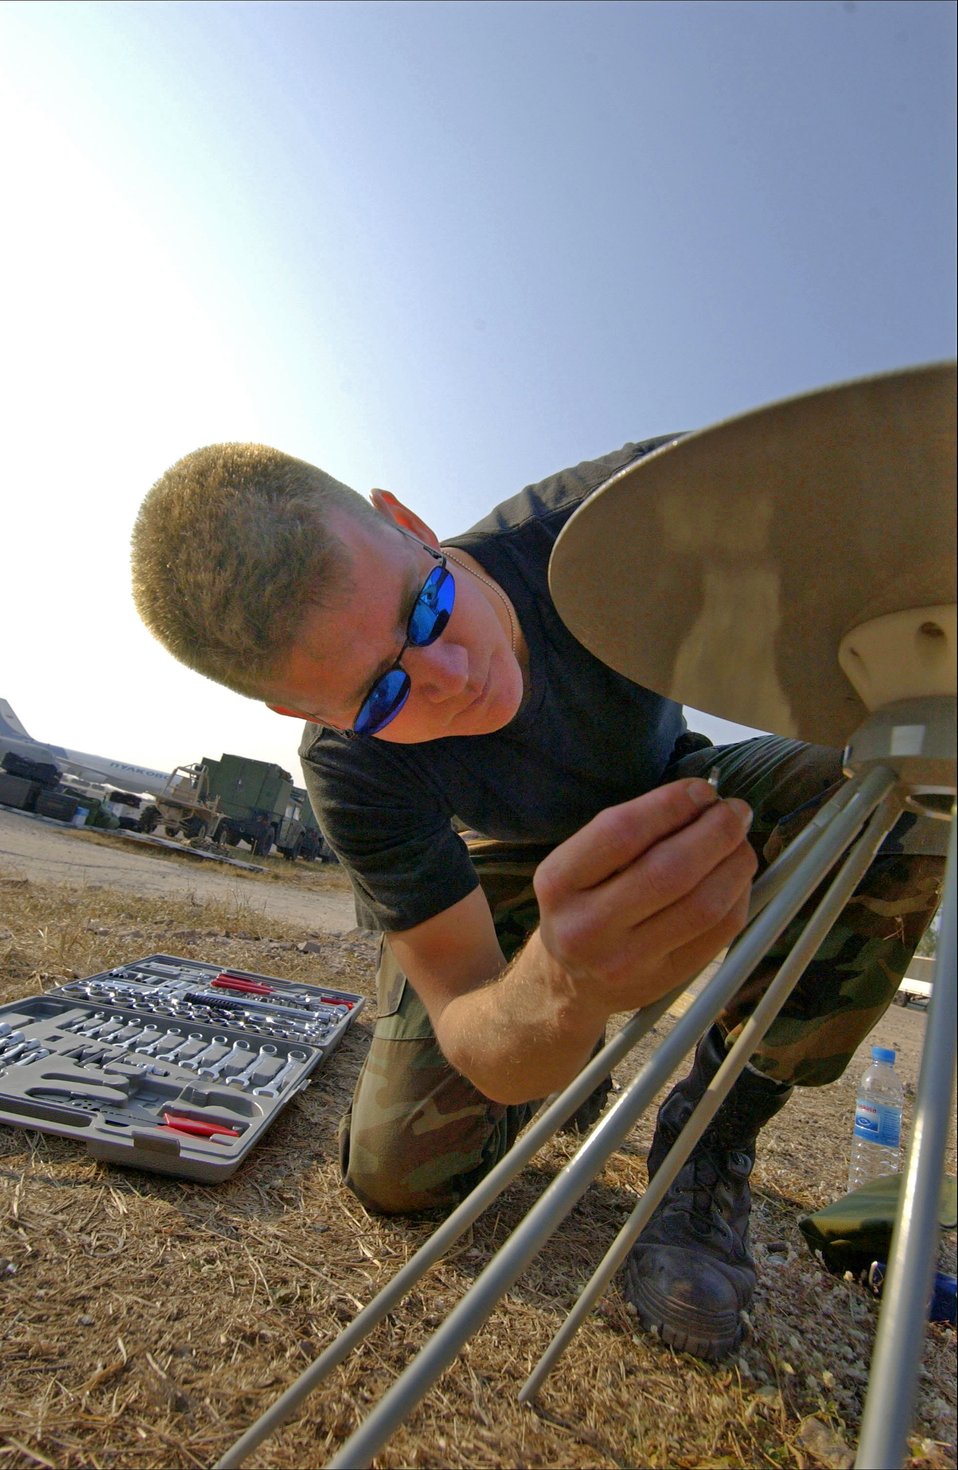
Making the connection

UTAPAO, Thailand -- Staff Sgt. Ralph Nathan assembles an antenna at the international airport here Jan. 4. He is a communications craftsman with the 615th Air Mobility Squadron here supporting the international tsunami relief efforts in the region where nearly 150,000 people are confirmed dead.